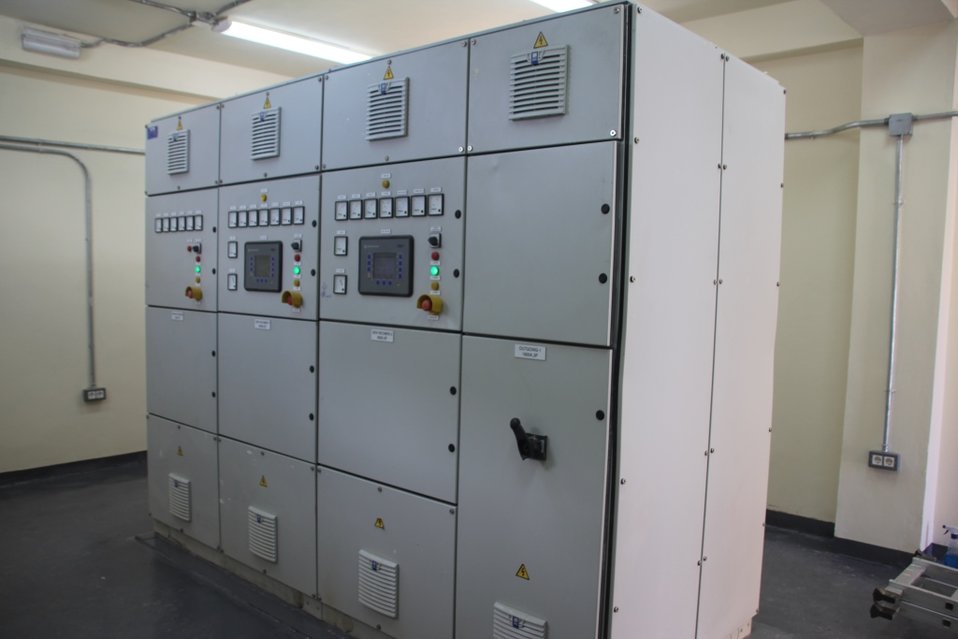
New power generator installed at Salang Tunnel as part of a US-financed rehabilitation project